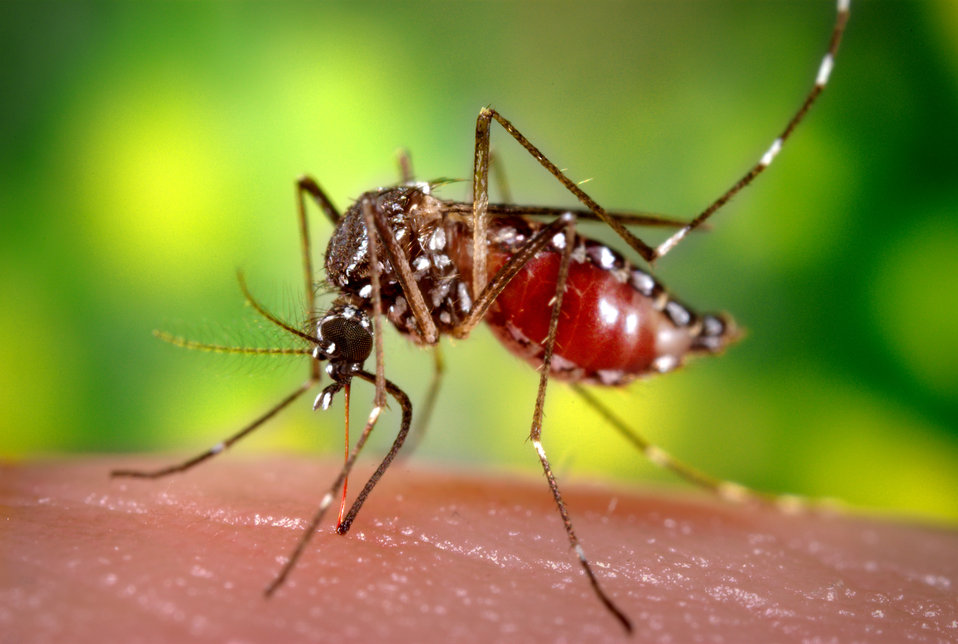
Mosquito bite

This 2006 image depicted a female Aedes aegypti mosquito as she was obtaining a blood-meal from a human host through her fascicle, which had penetrated the host's skin, and was reddening in color, reflecting the blood's coloration through this tubular structure. In this case, what would normally be an unsuspecting host was actually the CDC's biomedical photographer's own hand, which he'd offered to the hungry mosquito so that she'd alight, and be photographed while feeding. As it filled with blood, the abdomen became distended, stretching the exterior exoskeletal surface, thereby, causing it to become transparent, allowing the collecting blood to become visible as an enlarging intra-abdominal red mass.